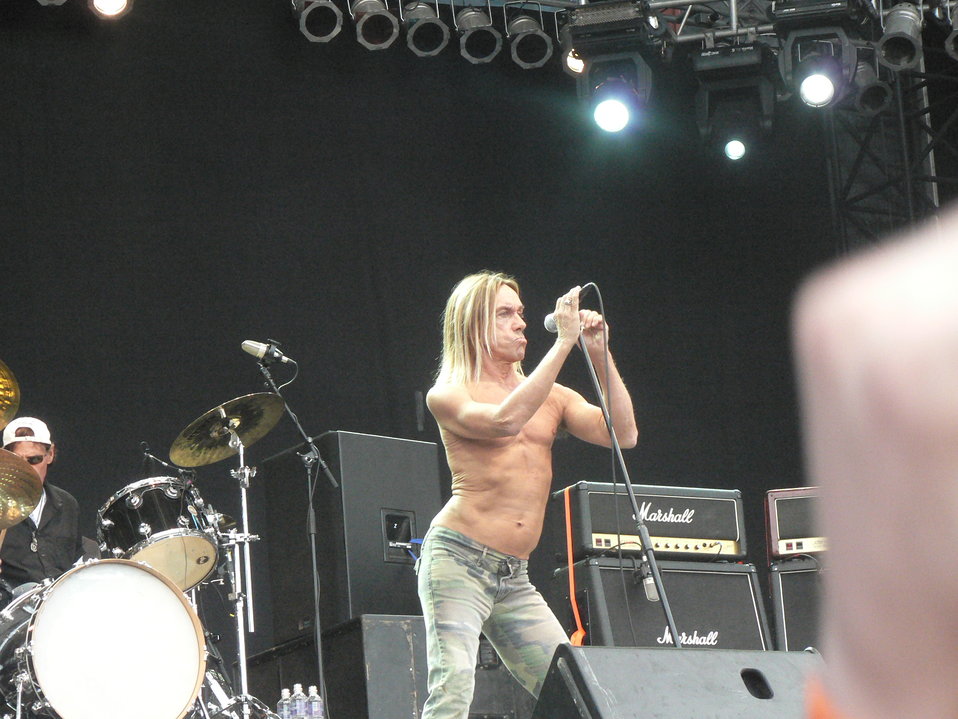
Sziget, Nagyszínpad, 2006 augusztus 15, 18 óra. A rocktörténelem egyik legnagyobb hatású együttese. A Stooges egyike a valóban legendás zenekaroknak, soha el nem évülő édes bűnökkel, máig érvényes munkássággal, fontos albumokkal, legendás koncertekkel és büntető slágerekkel. Az 1967-ben alakult zenekar (Iggy Pop - akkor még Iggy Stooges néven- , Ron Asheton, Scott Asheton és Dave Alexander) 1969-ben jelentette meg első albumát. A Stooges pszihodelikus, zsigeri gyökérrockos, garázsrockos, pre-punk zenéje millió zenekarra és irányzatra hatással volt a Sex Pistolstól a Gun”N and Rosesig, a Jane”s Addictiontól a Queens of Of The Stone Age-ig, a Red Hot Chili Pepperstől a Sonic Youthig. Eszünkbe juthatnak azonban a hazai előadók is: az URH, az Európa Kiadó vagy a Flash. Az 1947-es születésű Iggy Pop először 47 évesen koncertezett Magyarországon. Koncertet adott 2002-ben a Szigeten. 2004-ben egy ausztriai fesztiválon hajdani proto-punk együttesének, a legendás detroiti Stooges -nek a tagjai, az Asheton fivérek, a gitáros Ron és a dobos Scott, illetve Steve MacKay xaxofonos kísérték. (Az időközben elhunyt Dave Alexander basszista helyére egy másik punklegenda, Mike Watt ugrott be). Csak az 1969-es The Stooges és az 1970-es Fun House nagylemezek klasszikus dalait játszották, meg néhány új számot, amit a 2003-as újjáalakulás idején írtak Iggy Skull Ring albumára. Ha minden igaz, 2007-re egy komplett studiólemezt is felvesznek együtt és Elijah Wood főszereplésével mozifilm is készül Iggyről. Aki hatvanévesen is vadul ugrált és ordítozott a SZIGET Nagyszínpadán. A felvétel a színpad közepéhez vonalához közel, az első sorból készültek. A kép korábban Creativ Commons alatt megjelent a Metapolisz 5 DVD -n (ISBN: 963-06-0653-4).